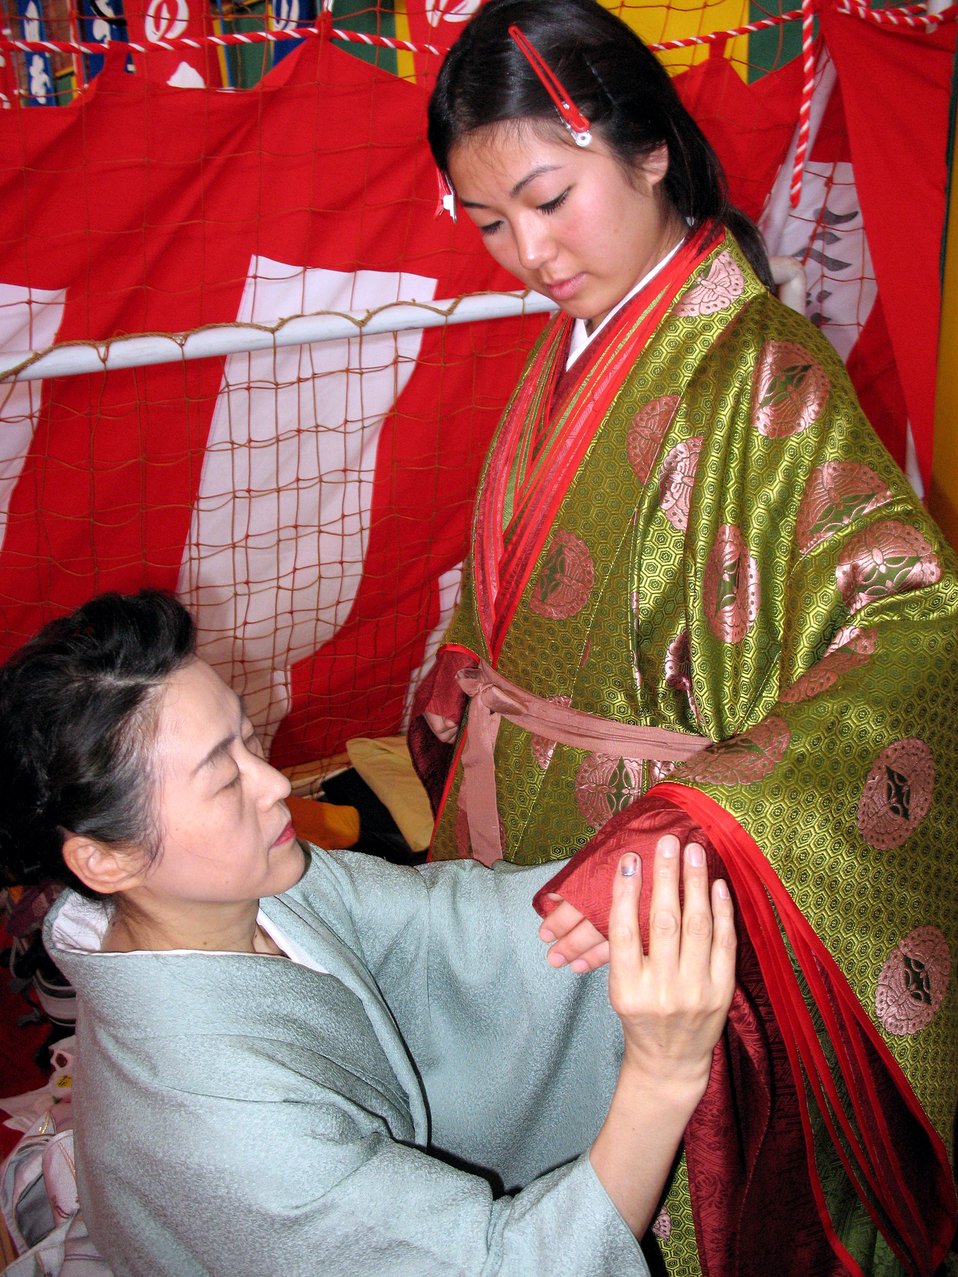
Airman exemplifies base's Japan Day

Airman 1st Class Song Lee dresses in one of the middle layers of an imperial kimono for Misawa Air Base's 20th Annual Japan Day. The entire outfit has 12 layers, which are most visible from the colored edges of the collar and sleeves. Airman Lee is assigned to the 610th Air Control Flight at Misawa AB.